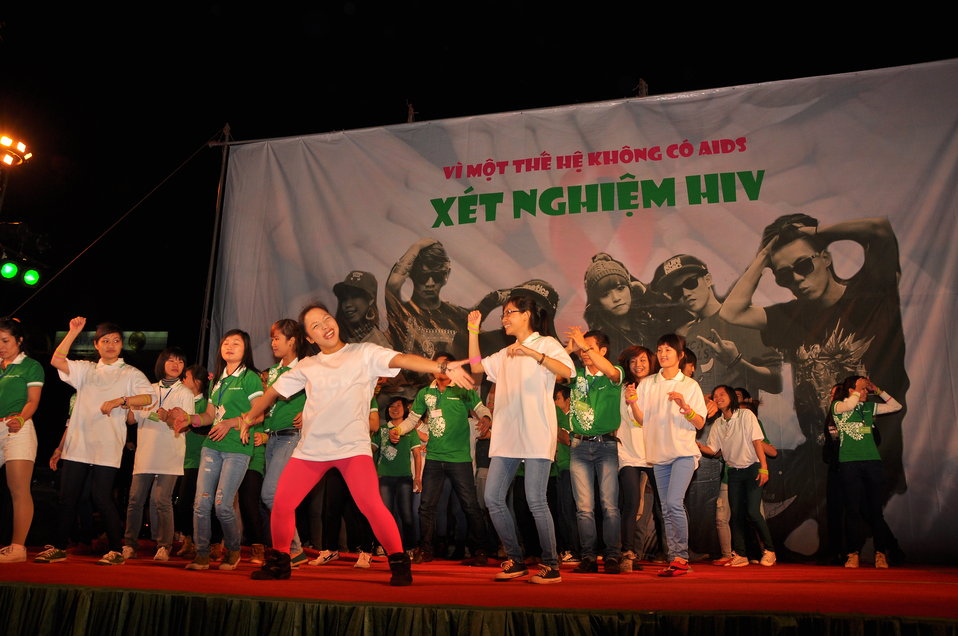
USAID and PEPFAR supports an outdoor concert to promote Vietnam's national action month for HIV

Hanoi, December 18, 2012.